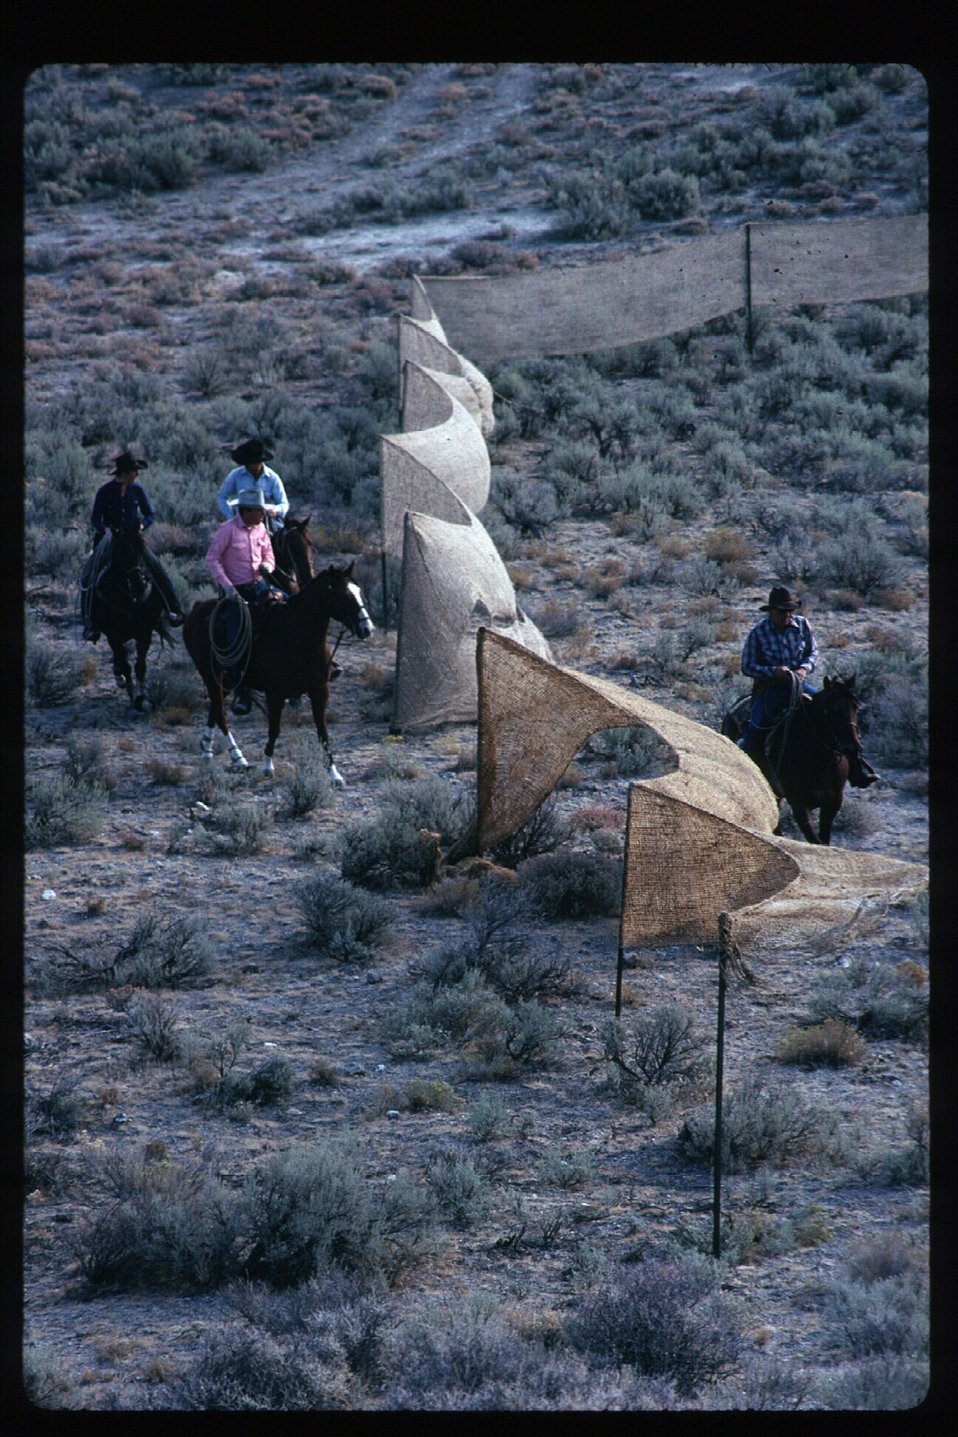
Wild Horse and Burro roundup Vale District Oregon Cowboys LSRD Lower Snake River District